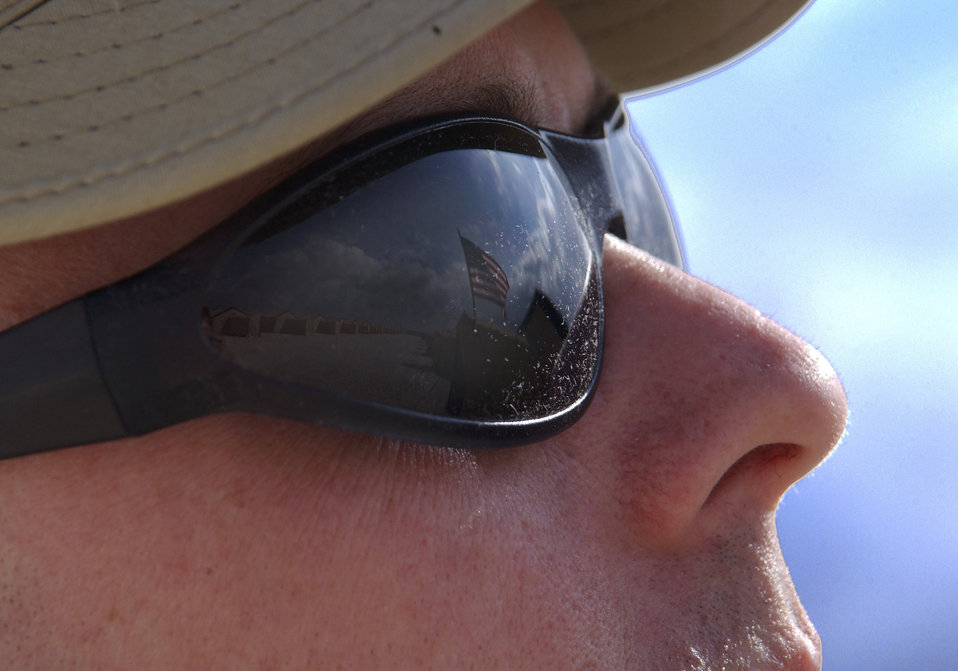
Oh say can you see...

OPERATION ENDURING FREEDOM -- An airman from the 410th Air Expeditionary Wing watches Old Glory fly high atop the living quarters at a forward-deployed location.